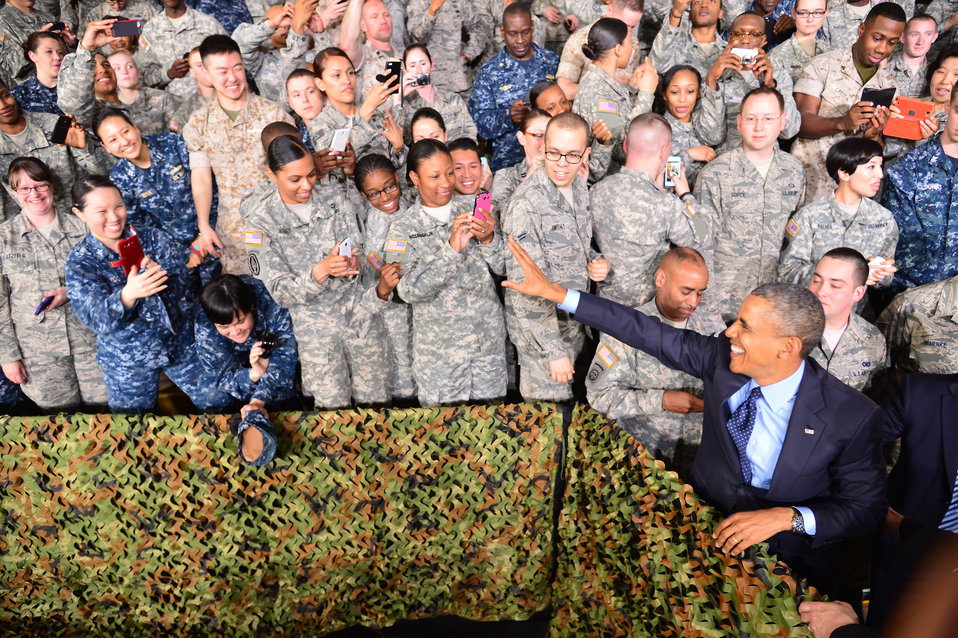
President Obama Delivers Remarks at a Combined Forces Command Briefing

President Barack Obama delivers remarks at a Combined Forces Command Briefing at Yongsan Garrison in Seoul, Republic of Korea on April 26, 2014.